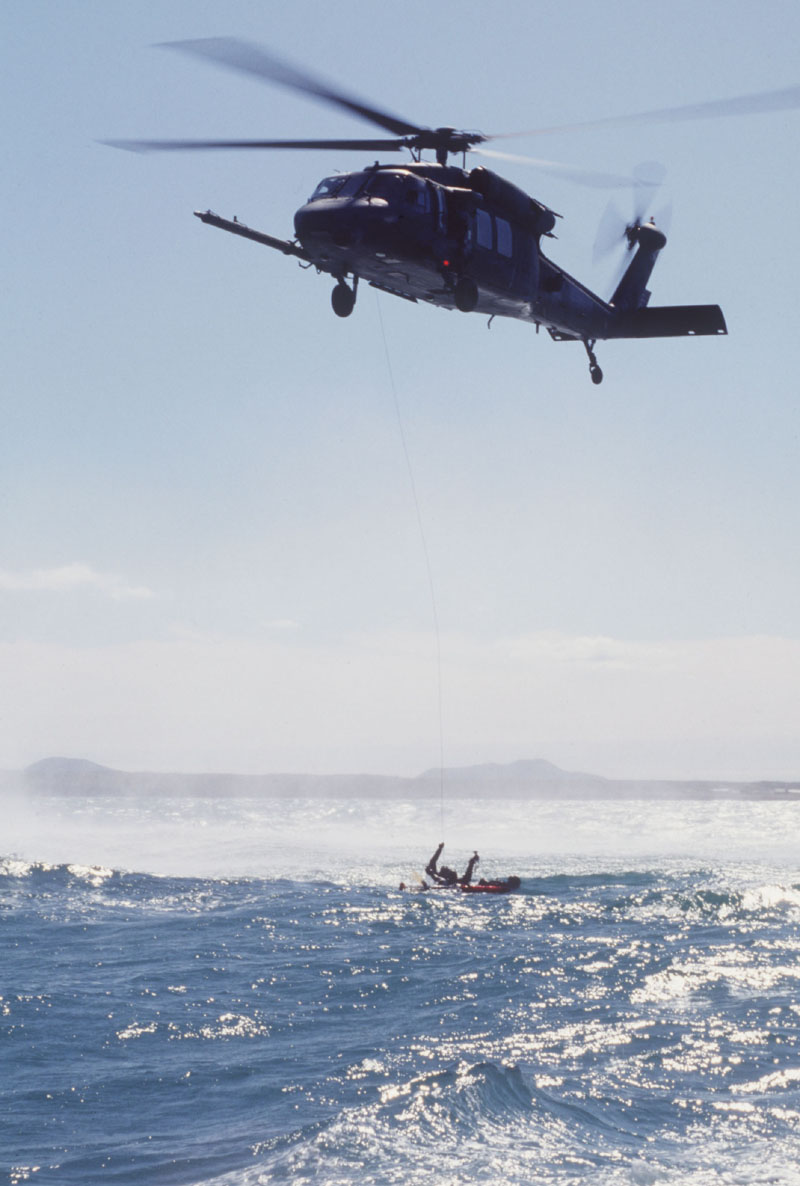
Icy rescue

NAVAL AIR STATION KEFLAVIK, Iceland -- An HH-60G Pave Hawk from the 56th Rescue Squadron, performs a rescue of a simulated downed airman off the coast of Iceland. During the rescue of the airman, a pararescueman jumps from the helicopter to help the survivor into the stretcher so he may be hoisted up.